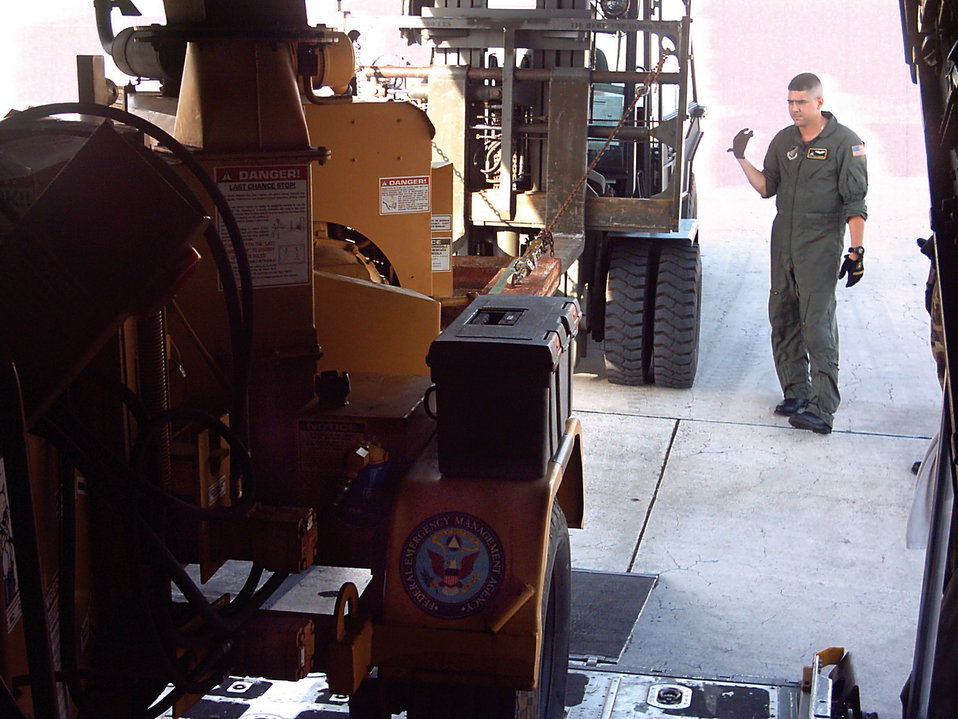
Typhoon Sudal

CAROLINE ISLANDS, Micronesia -- Staff Sgt. Ryan Cumrine directs the delivery of a wood chipper for relief aid to the island of Yap. Typhoon Sudal devastated the island April 10, destroying trees, homes and shutting down the island's infrastructure. Crews from Yokota Air Base, Japan, supported relief efforts to the island by delivering 31 passengers and 102.4 short tons of cargo out of Andersen AB, Guam.